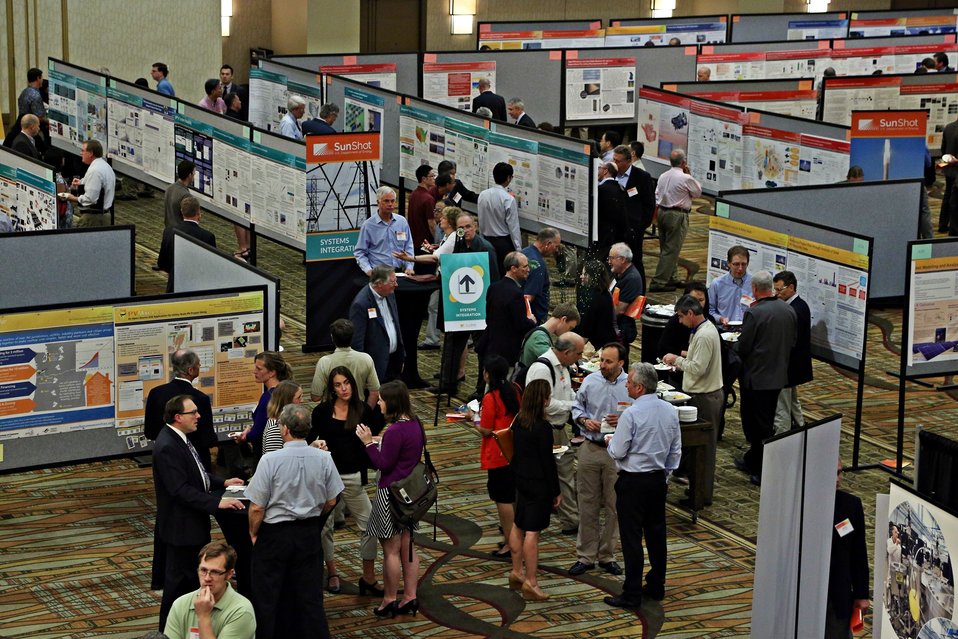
Tech Forum 7

The Tech Forum floor from above.